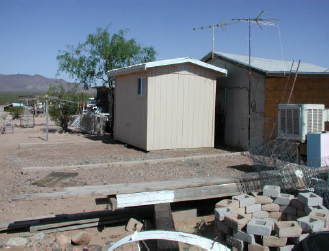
dftmpMEMAOGMMtkkkkkkk--------

The U.S. Department of Agriculture’s (USDA) Rural Development (RD) agency assisted in the construction of modular bathrooms that were added to homes on the Tohono O’odham Nation in southern Arizona on Nov. 1, 2012. Homes on the reservation were built years ago without indoor plumbing and the hope of adding sanitary facilities was stymied by the lack of access to treatment facilities. USDA RD has provided aid to Colonias in Arizona, California, New Mexico, and Texas. Colonias are neighborhoods or communities within 150 miles of the U.S./Mexico border that are economically distressed.